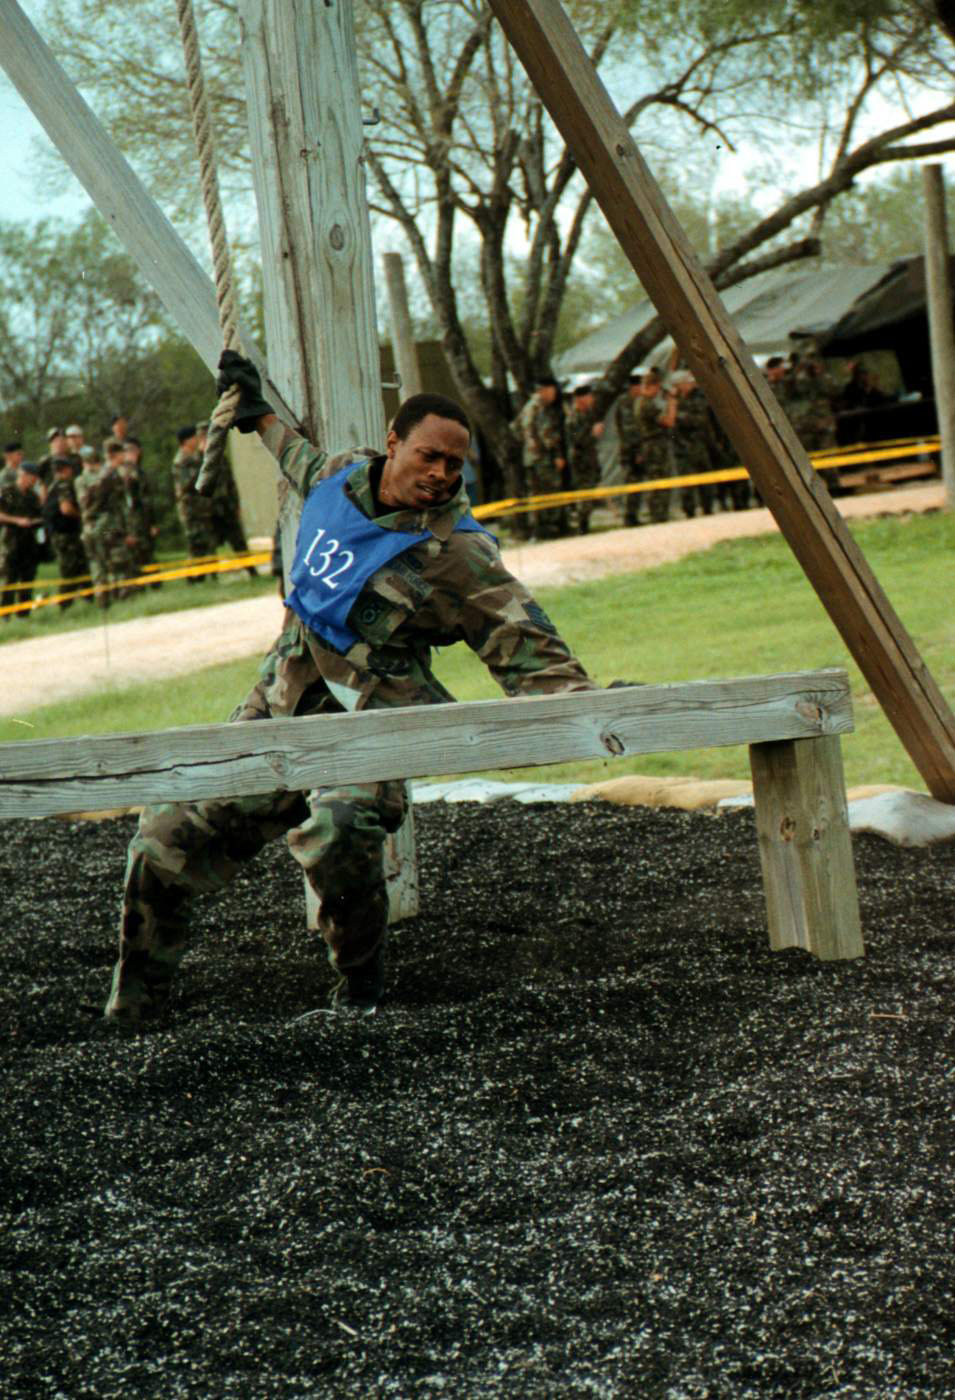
Fit to fight

LACKLAND AIR FORCE BASE, Texas -- Staff Sgt. Titus O. Kornegay, a member of the 11th Wing Defender Challenge team, finishes sliding down the rope and prepares to jump over the next obstacle during the 'fitness challenge' Oct. 30 at the Defender Challenge Competition at Lackland Air Force Base, Texas.